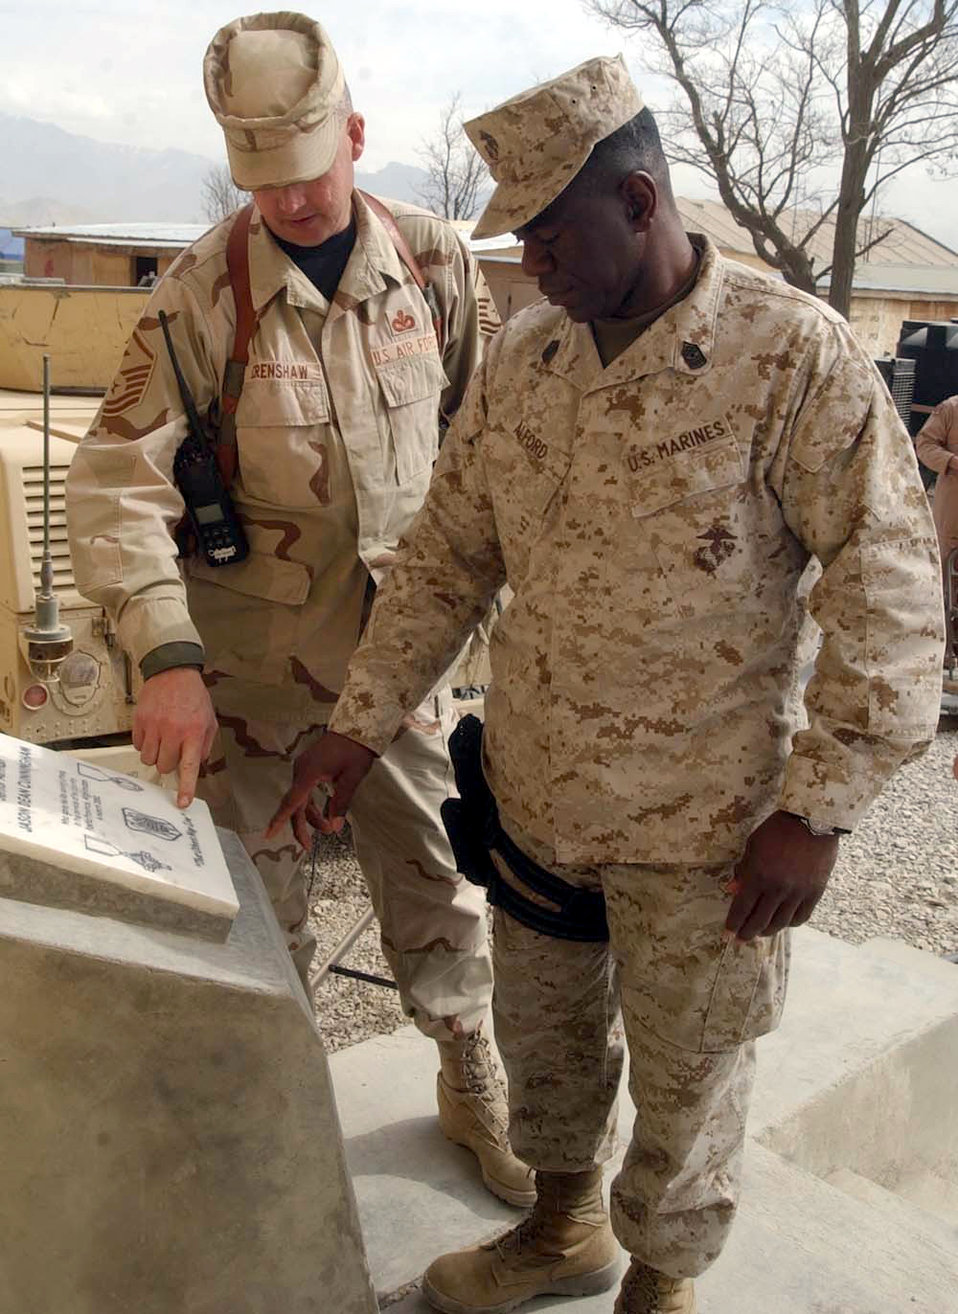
Paying tribute

BAGRAM AIR BASE, Afghanistan -- Master Sgt. Taylor Crenshaw and Marine Sgt. Maj. Jerome Alford take a moment to reflect on the life of Senior Airman Jason. D. Cunningham at a monument dedicated to him. Airman Cunningham was a pararescueman killed in action during Operation Enduring Freedom. Sergeant Crenshaw is the first sergeant of the 455th Expeditionary Operations Group.